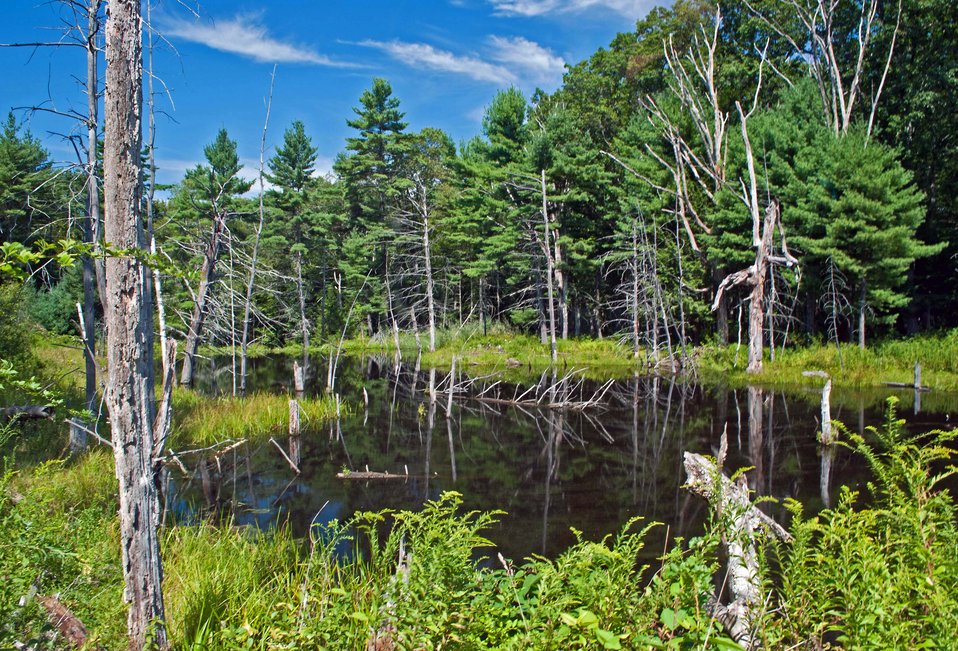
Beaver pond

Great Bay National Wildlife Refuge, MA.